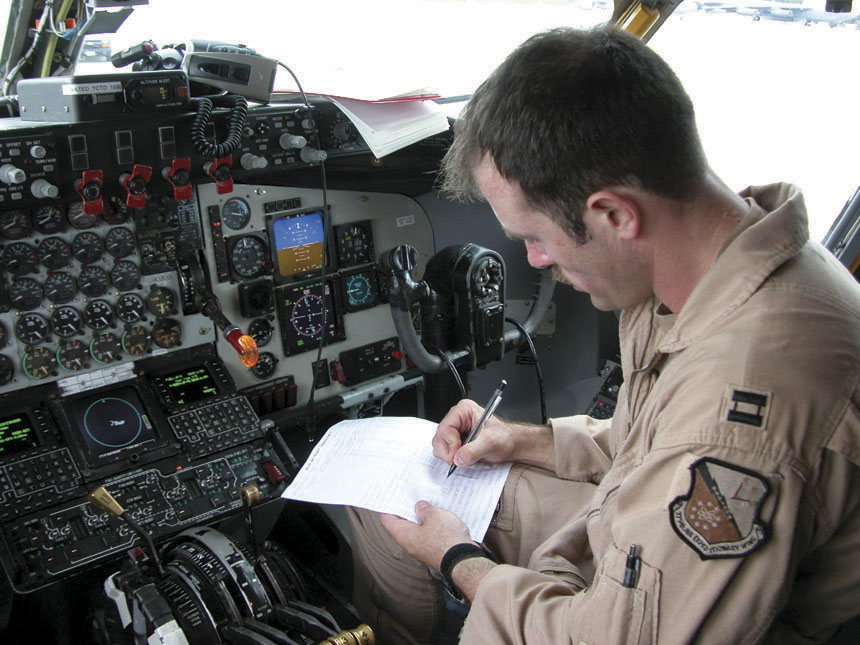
Airmen deliver fuel in flight

SOUTHWEST ASIA -- Capt. Brandon Fleck prepares for a refueling mission in a KC-135 Stratotanker's flight deck. He is a pilot with the 340th Expeditionary Air Refueling Squadron at a forward-deployed location.